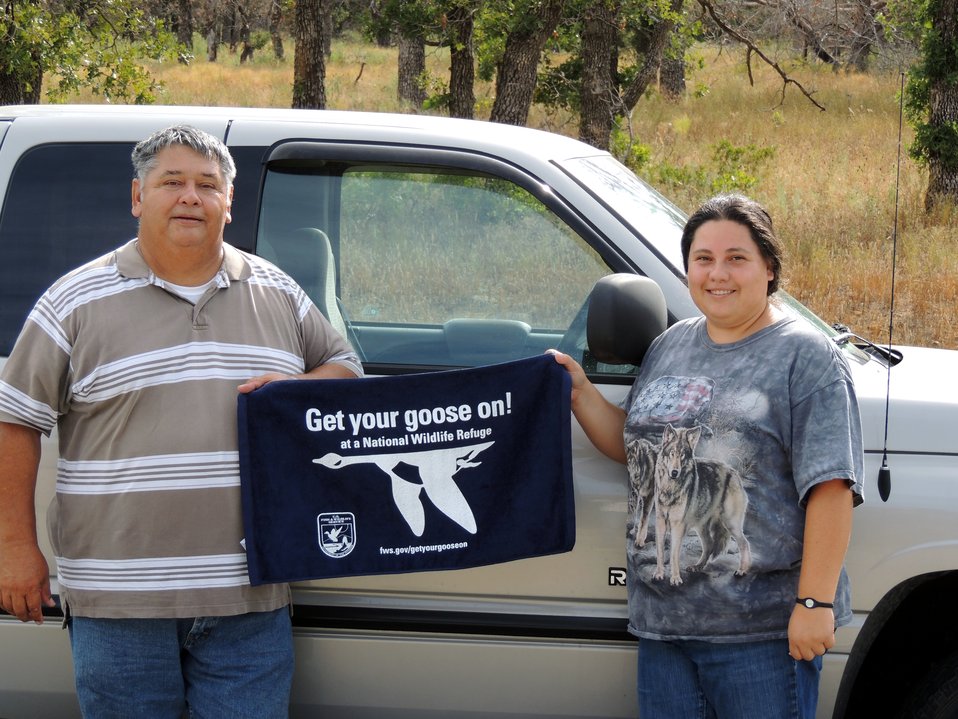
Get Your Goose On!

Wichita Mountains National Wildlife Refuge in Oklahoma.